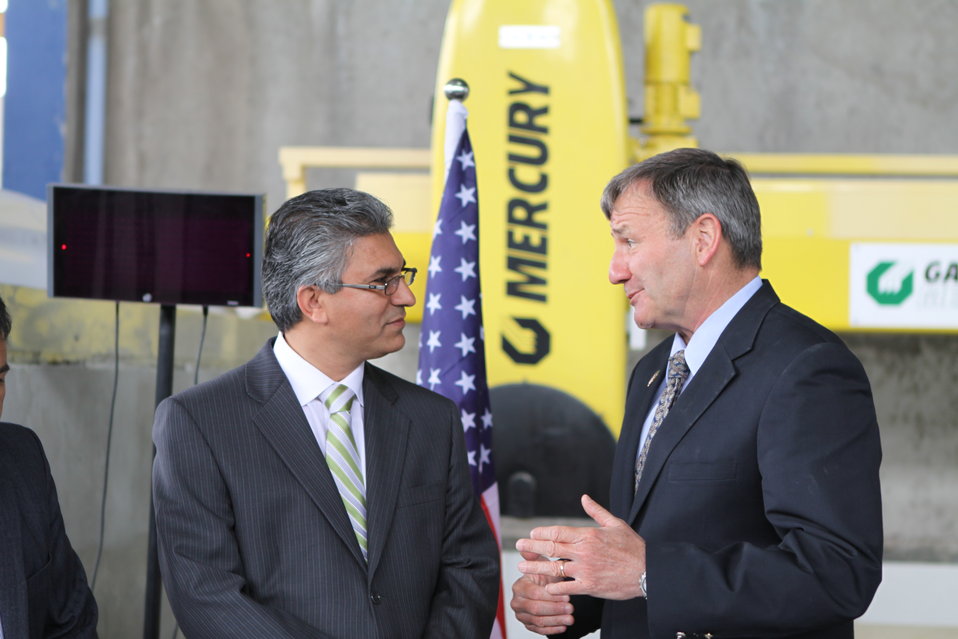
100525 Hirat Marble Conference 114